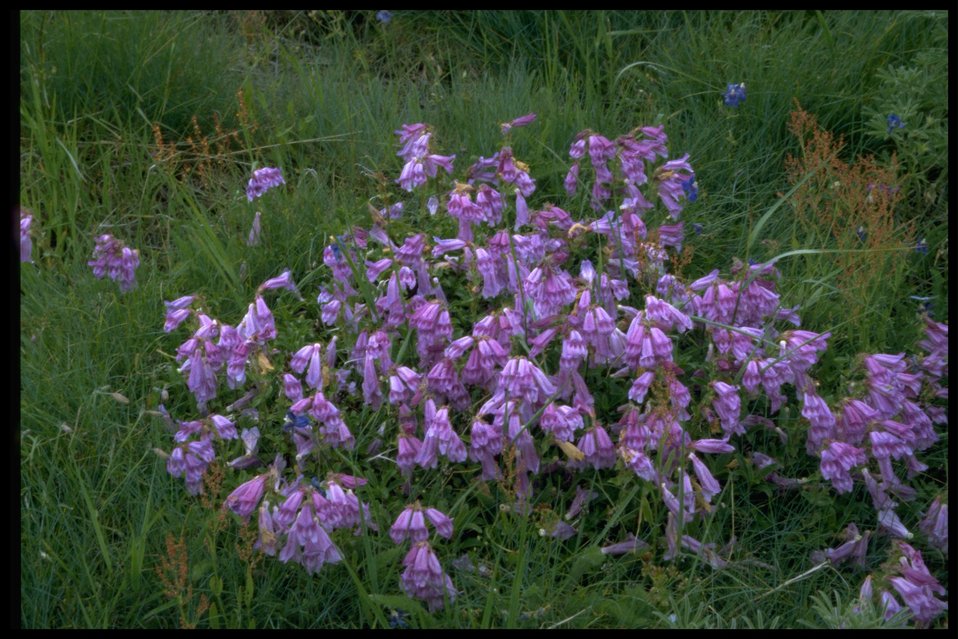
Medium shot of wildflowers (genus Penstemon).